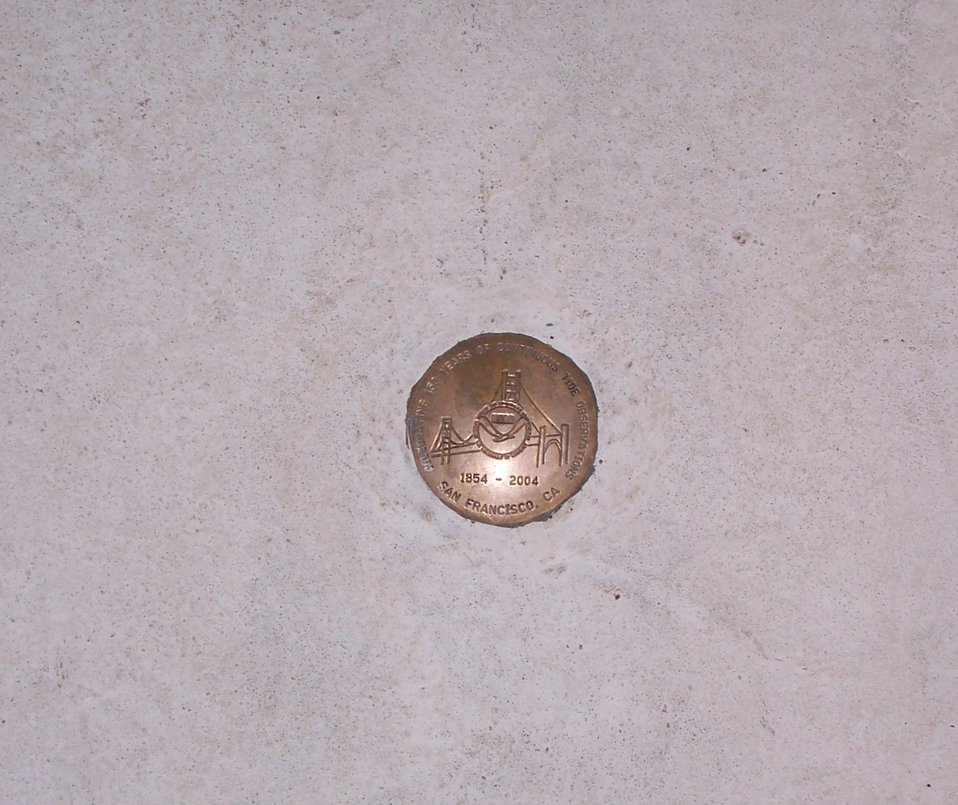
A commemorative bench mark celebrating 150 years of continuous operations by the San Francisco tide gauge, the longest running series of tidal observations in the Americas.